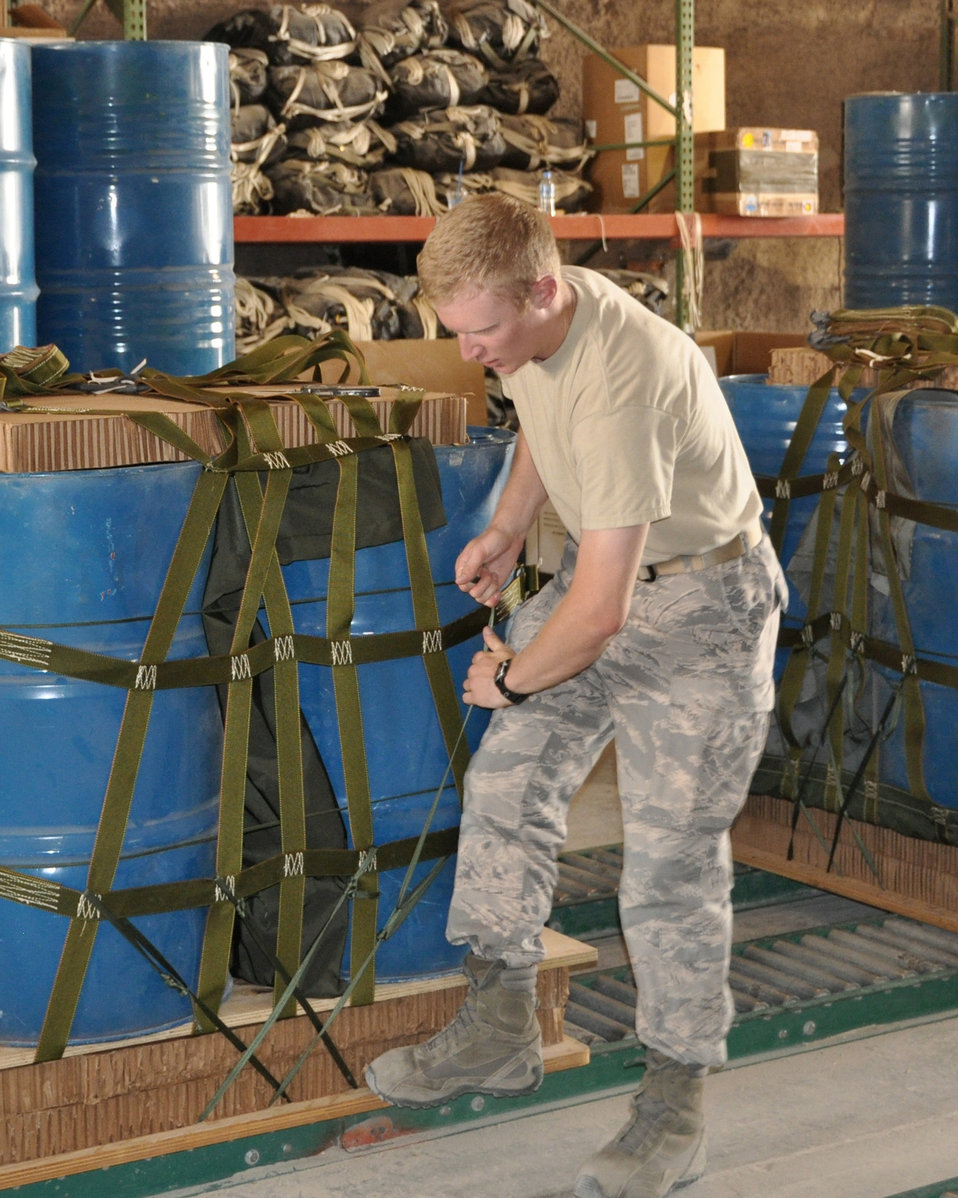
USAFA

U.S. Air Force Academy Cadet 1st Class Jordan Wittman pulls on straps to ensure the cargo bundle is securely fastened to the pallet while working with U.S. Army Riggers June 18, 2011, in Southwest Asia. Cadet Wittman is taking part in